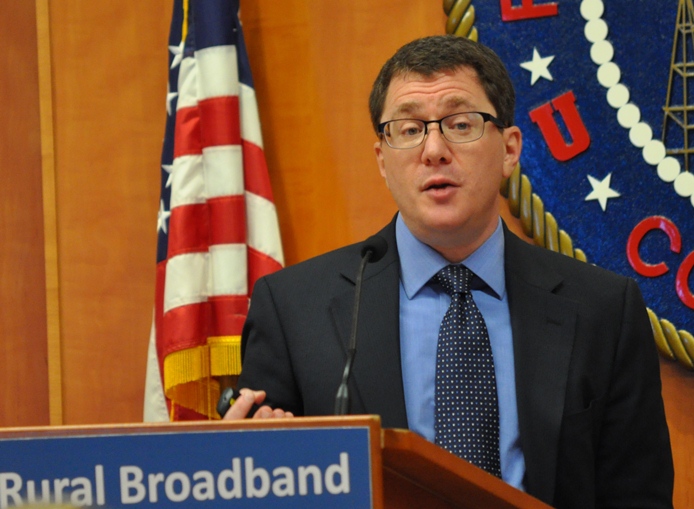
Rural Broadband Workshop: March 19, 2014

Introductory Remarks for Panel 1 from Steve Rosenberg, Chief Data Officer, Wireline Competition Bureau, FCC